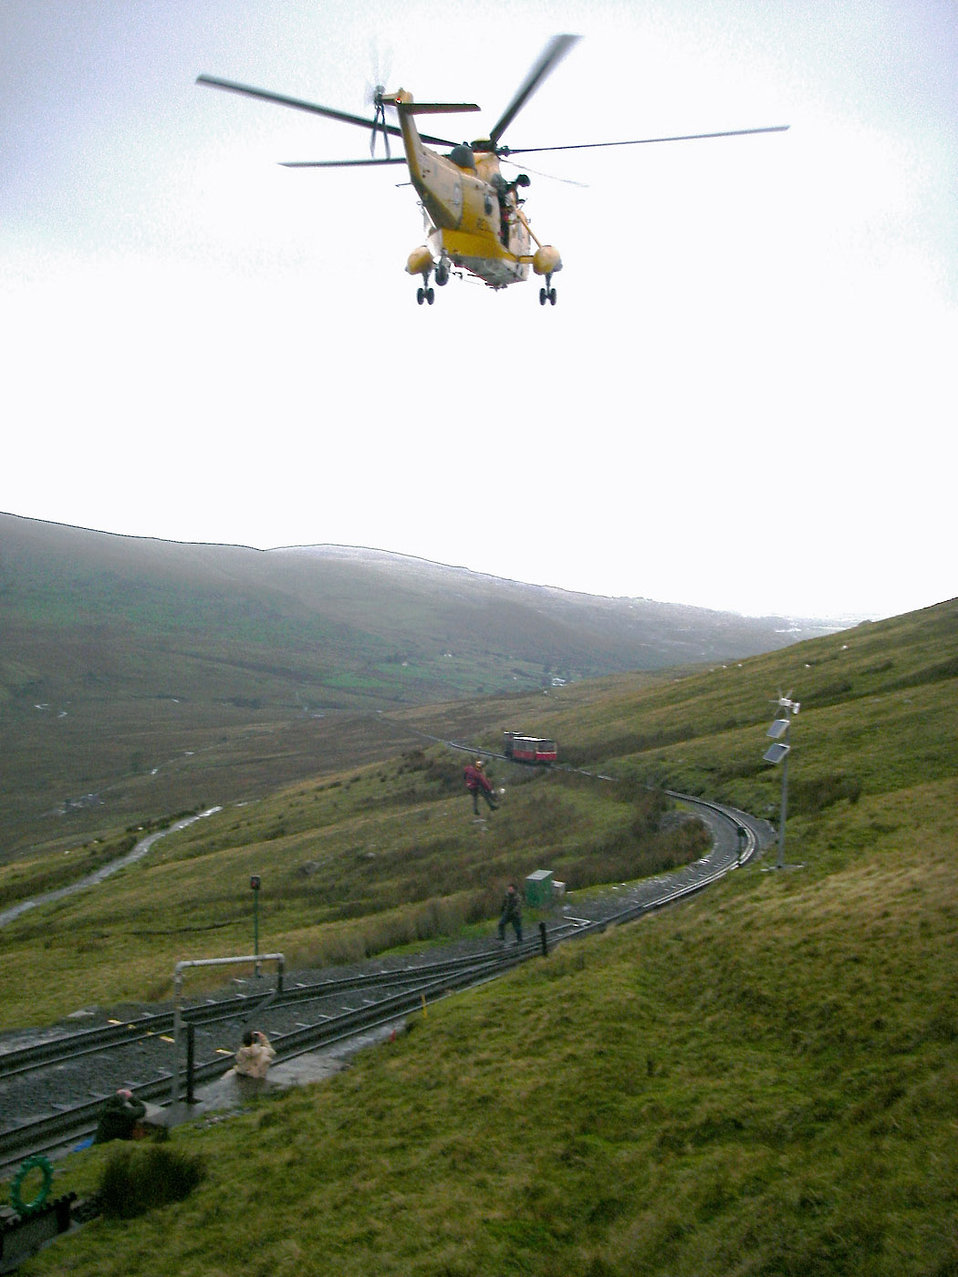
Bad weather, coincidences turn mountain climbing trip into rescue mission

A rescue helicopter from 22 Squadron, Royal Air Force Valley, Wales, winches up the casualty from halfway down Mount Snowdon, ready to take him to the hospital. Three British firefighters, Alan Coldwell, Chris Gould, and Jerry Miles, all 100th Civil Engineer Squadron fire department, and their mountain guide, Dave Wainwright, 100th Force Support Squadron outdoor recreation, rescued the man they found alone and suffering from hypothermia and frostbite at the peak of Mount Snowdon Oct. 3. After calling emergency services, the four helped bring him halfway down the mountain, with the help of passengers on a train from Snowdon Mountain Railway. The train never usually runs at this time of the year as the weather is too bad, but by coincidence, it was taking passengers to the top of Mount Snowdon at the same time the firefighters found the man.